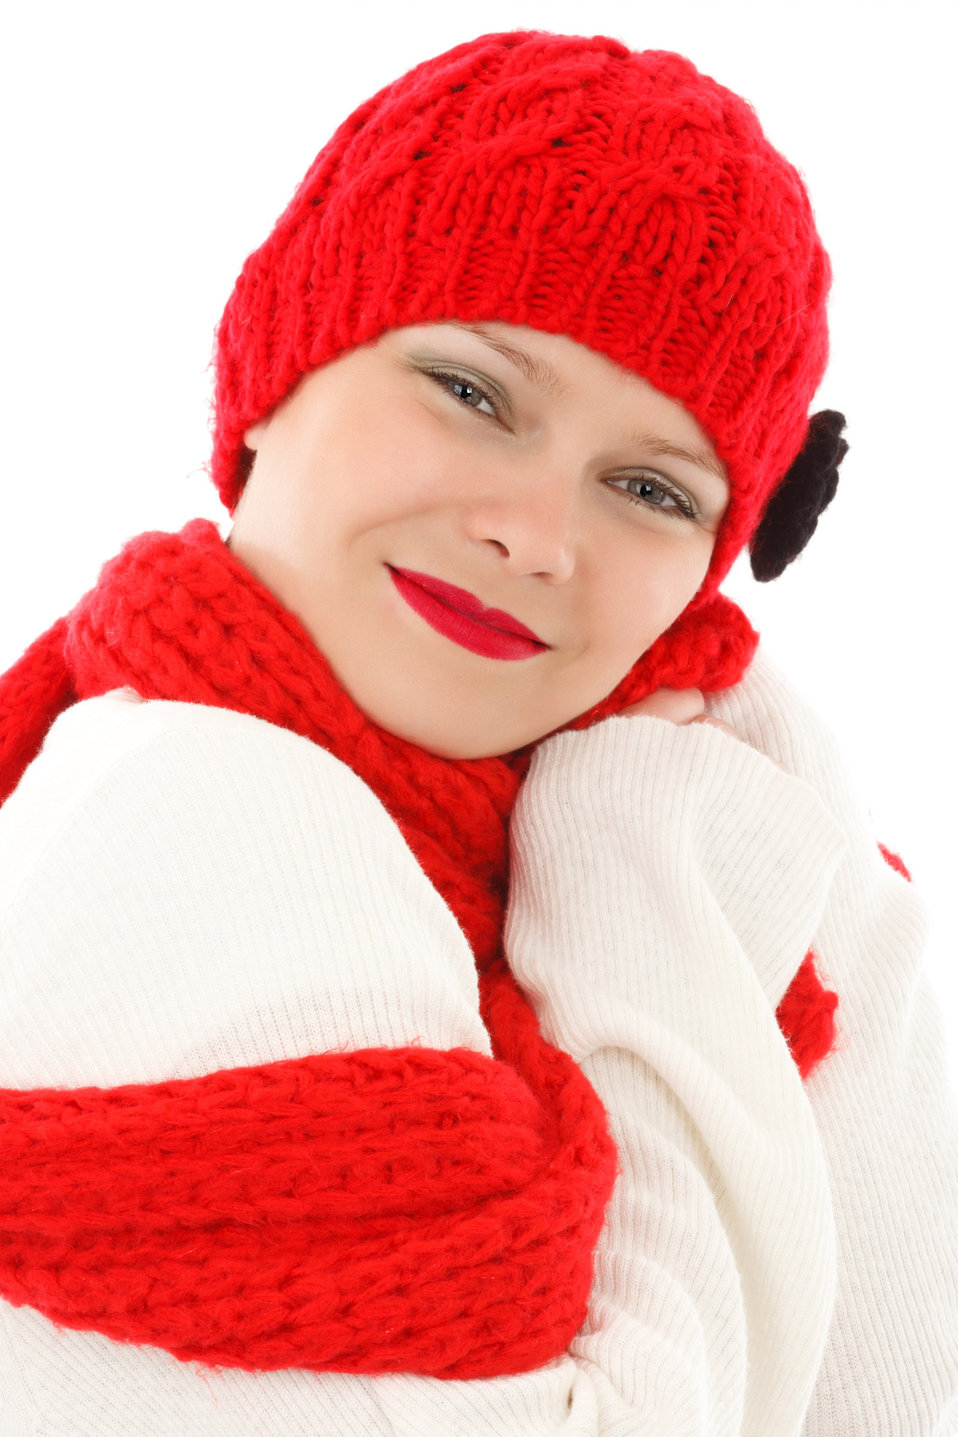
Winter woman in red

Young woman in red winter clothes.